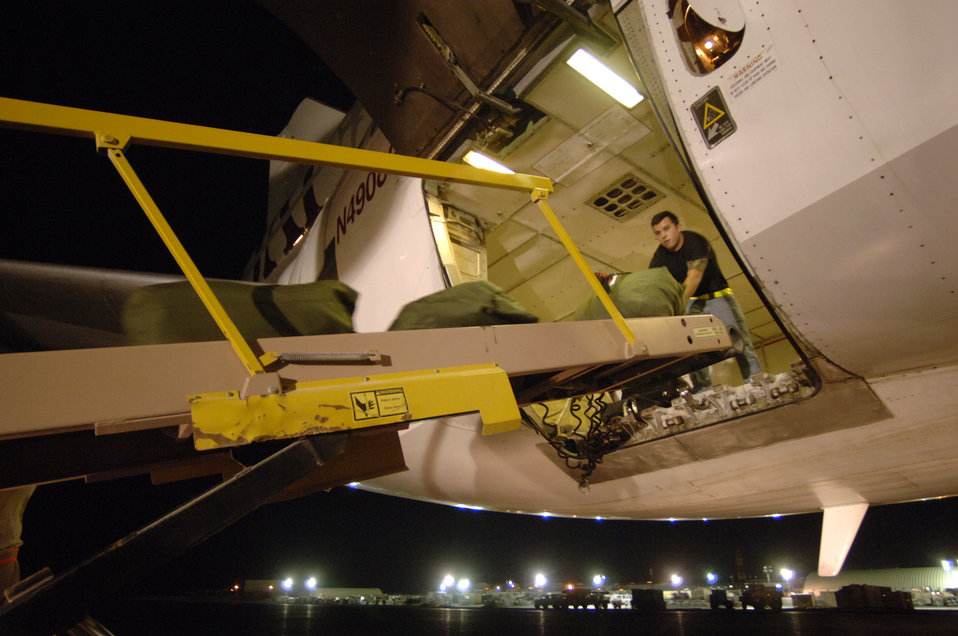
Work begins when boots hit the ground

Minutes after landing in Southwest Asia, Staff Sgt. Tony Alba joins 30 other volunteer passengers Sept. 17 in removing luggage from the cargo hull of a commercial DC-10 airliner. Sergeant Alba is a personnelist from Fairchild Air Force Base, Wash.